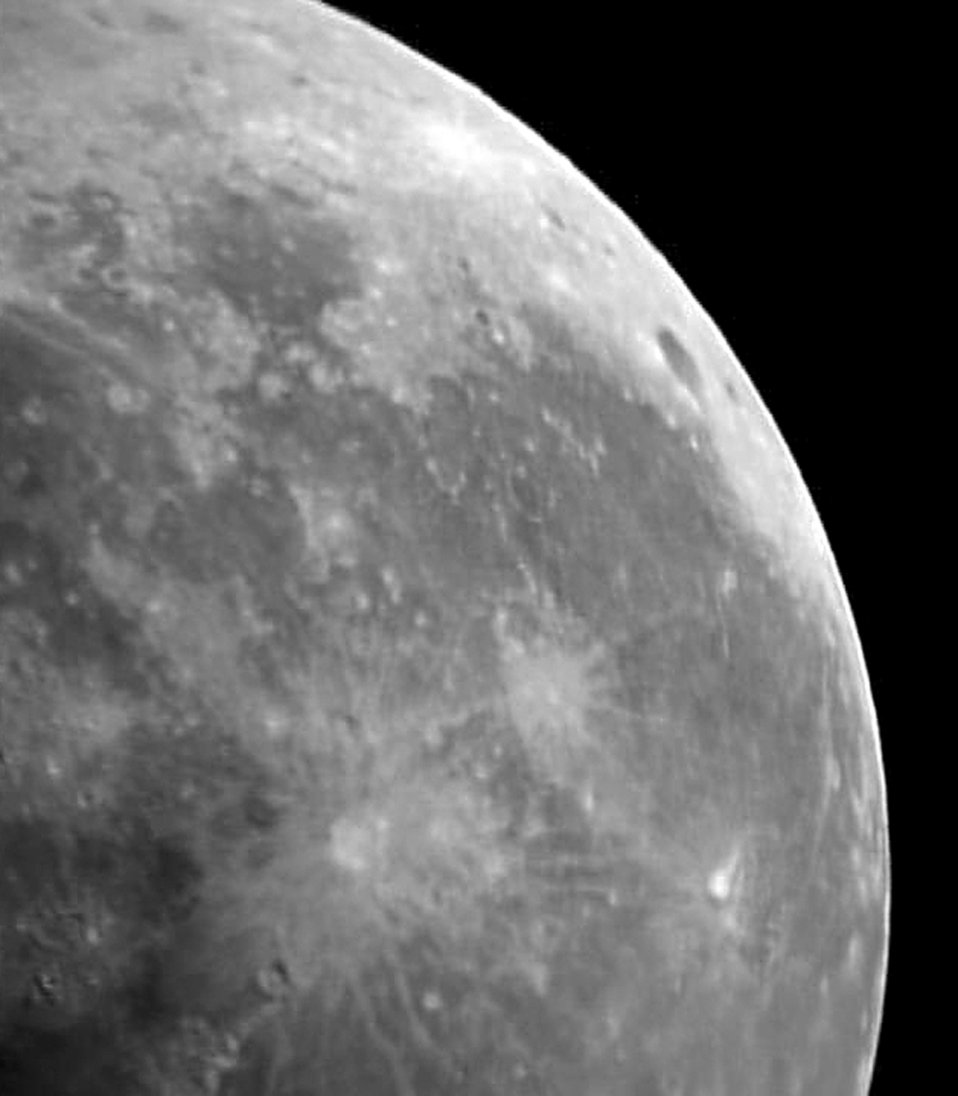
Schriever space pros keep eyes on the skies

On this photograph of the moon features include the Copernicus and Grimaldi craters (bottom left and top right), Mare Insularum and Oceanus Procellarum (center). The Apollo 12 landing site, though not visible, is near the bottom center. The photographer, Lt. Col. John Moss, is commander of the Space Innovation and Development Center's 25th Space Control Tactics Squadron at Schriever Air Force Base, Colo.